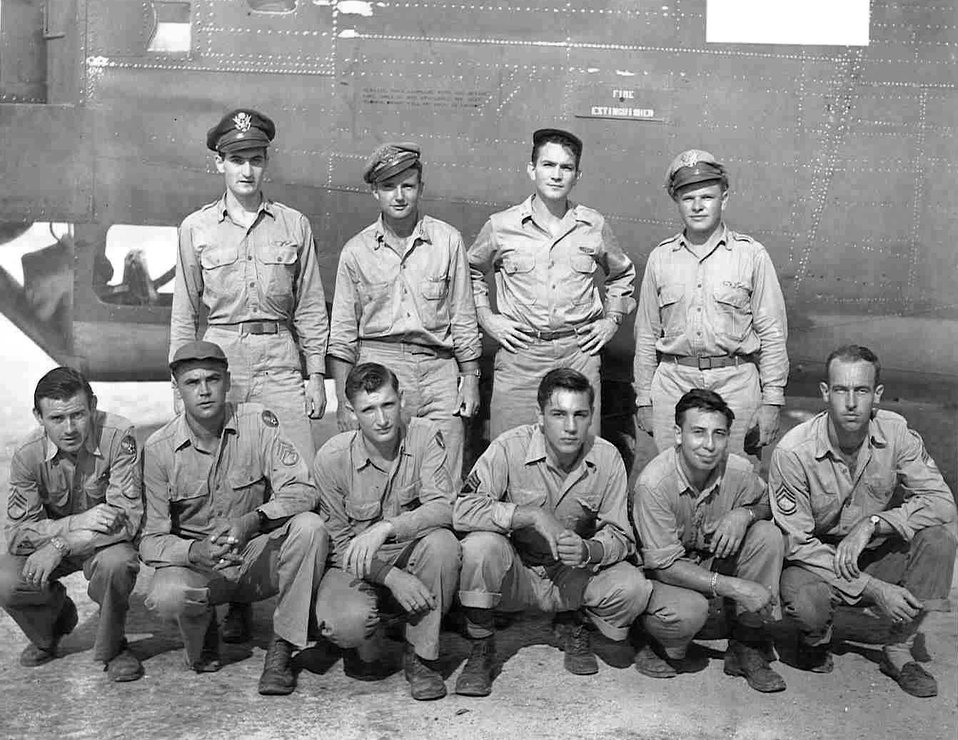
B-24 gunner receives Purple Heart for heroism in WW II

Staff Sgt Roy E. Talbott is shown third from left in the bottom row with fellow crewmembers during World War II. Mr. Talbott received a Purple Heart Aug. 21 at Randolph Air Force Base, Texas. He served as a B-24 gunner with the 72nd Bomb Squadron of the 13th Air Force's 5th Bomb Group, and received the Purple Heart for injuries he received in an attack by Japanese fighter planes in the Pacific Theater during World War II.